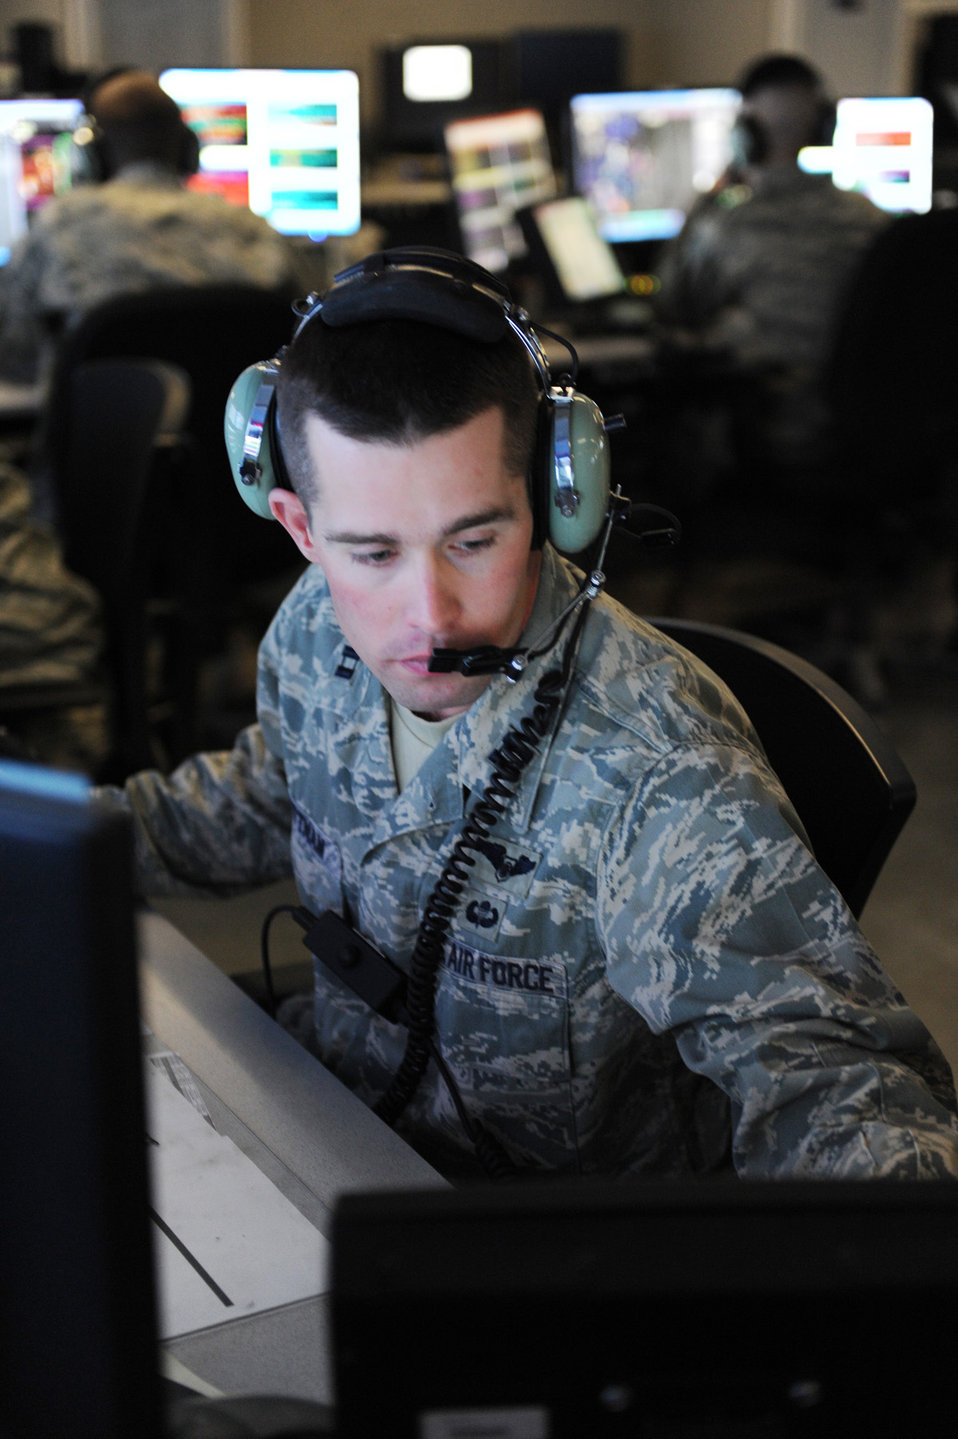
Remote ground radar keeps AOR personnel safe

Capt. Matthew Wittnam manages and oversees support and combat aircraft into target areas July 13 in Southwest Asia. The 71st EACS provides around-the-clock air defense and air battle space management within the area of responsibility. Captain Wittnam is the 71st Expeditionary Air Control Squadron senior director and is deployed from Spangdahlem Air Base, Germany.